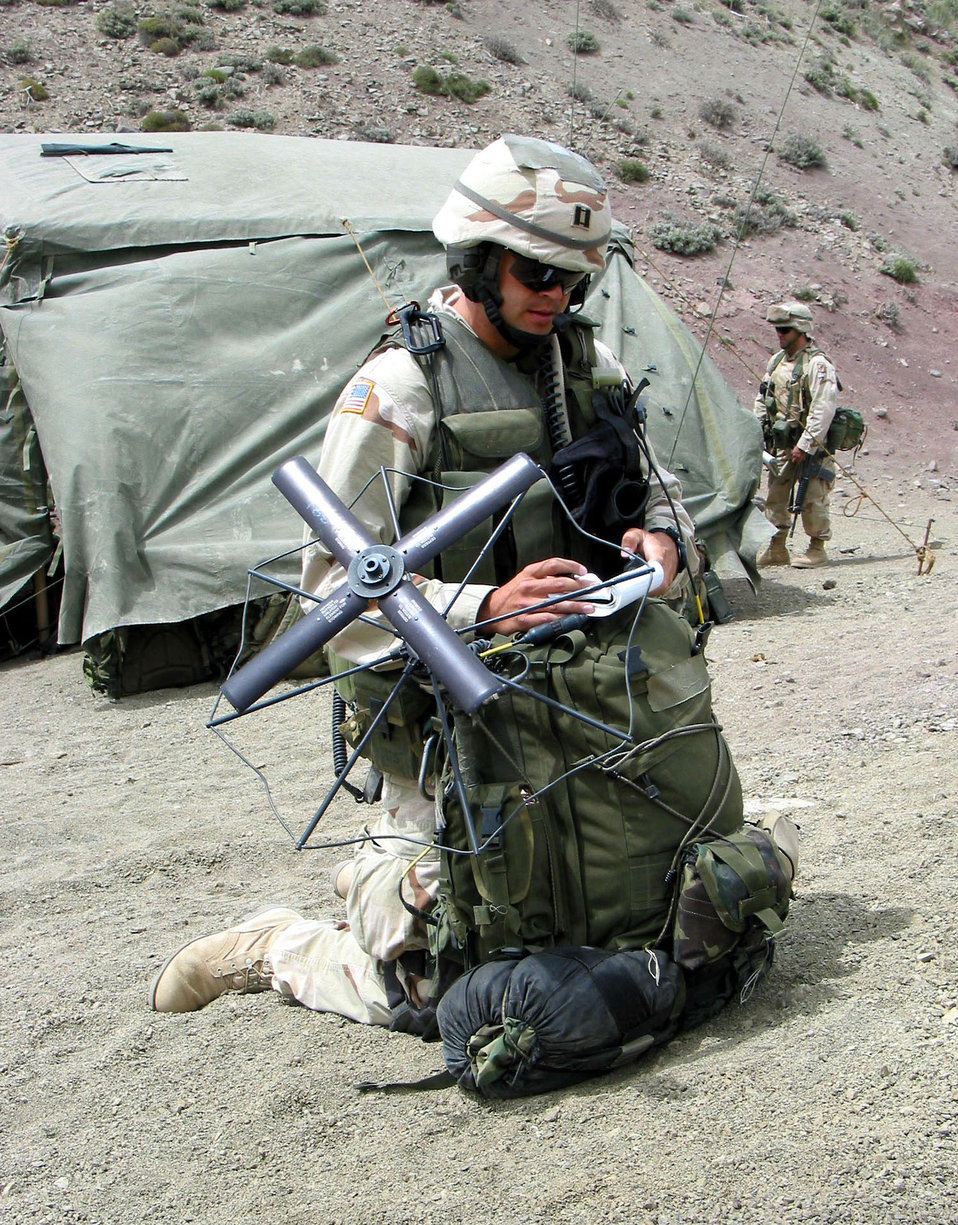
Talking to Falcons

OPERATION ENDURING FREEDOM -- Capt. Danny Stout, an air liaison officer deployed with the Army's 2-505 Parachute Infantry Regiment of the 82nd Airborne Division, talks with F-16 Fighting Falcons flying overhead during a classified mission in the mountains of Afghanistan. Stout, a B-52 Stratofortress pilot, is serving a two-year tour with the Army, calling in close-air support missions against enemy troops.